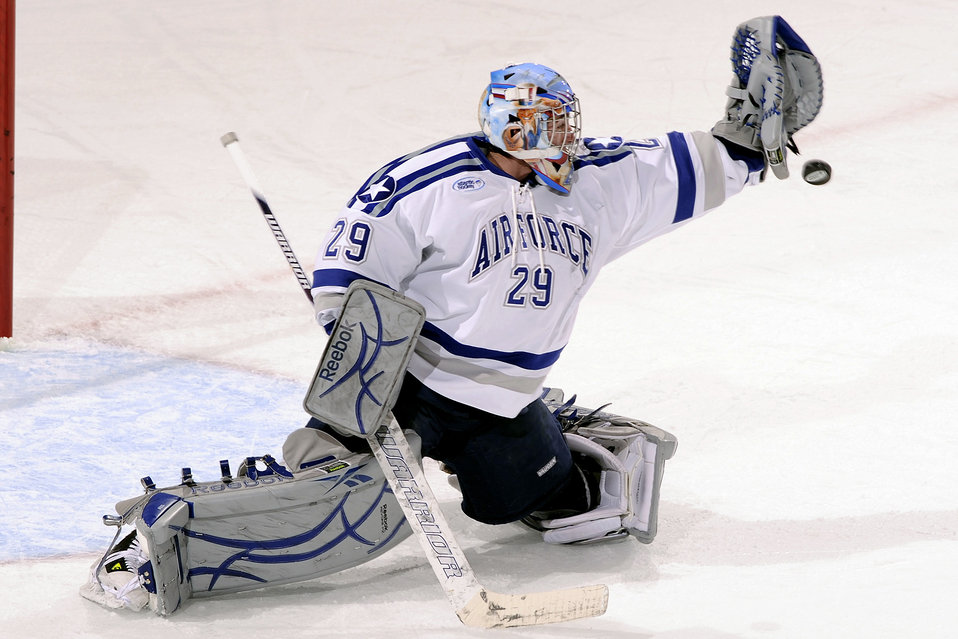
Falcons upset No. 3 Bulldogs, 4-3

Air Force goalie Jason Torf blocks a shot on goal during the Falcons' match against No. 3 Yale Nov. 14, 2010, at the U.S. Air Force Academy's Cadet Ice Arena. Torf was named an Atlantic Hockey Association rookie of the week after making 34 saves in the Falcons' 4-3 victory.